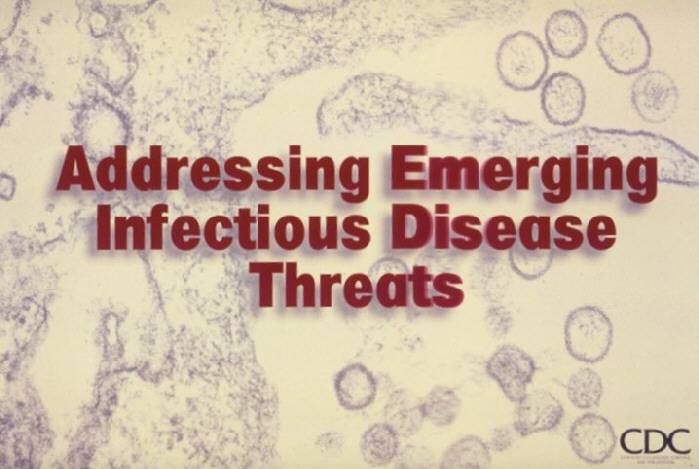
Title slide: Addressing Emerging Infectious Disease Threats